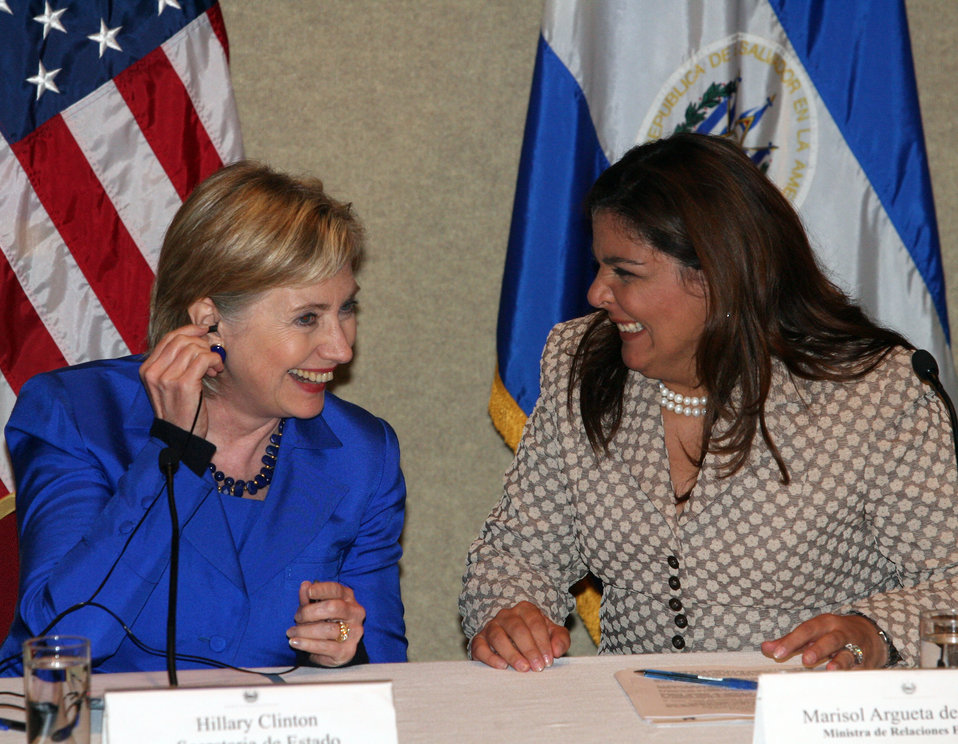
Secretary Clinton, Salvadorian and Costa Rican Foreign Ministers Address Press Conference

U.S. Secretary of State Hillary Rodham Clinton, Salvadoran Foreign Minister Argueta, and Costa Rican Foreign Minister Stagno (not in photo) address a press conference following the second Pathways to Prosperity Ministerial in San Salvador May 31, 2009. Secretary Clinton announced a forthcoming Pathways conference on women, to be held this fall in the U.S.